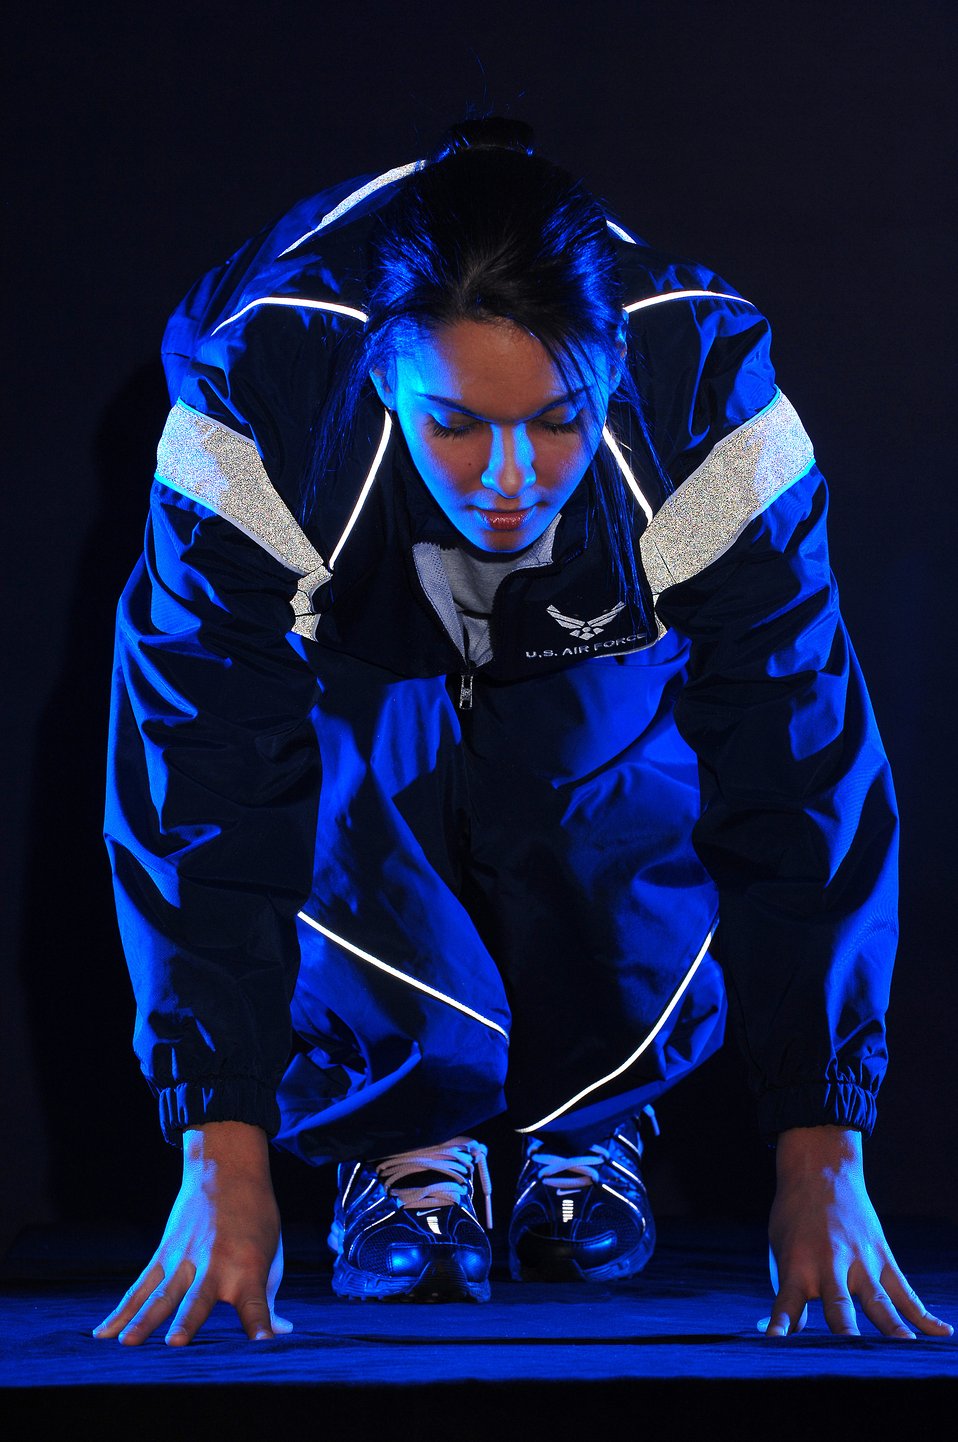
Hold that pose

Airman 1st Class Savannah Orozco is photographed at the multimedia studio at McChord Air Force Base, Wash., on Jan. 5 for a fitness poster. Airman Orozco is with the 62nd Operations Support Squadron.